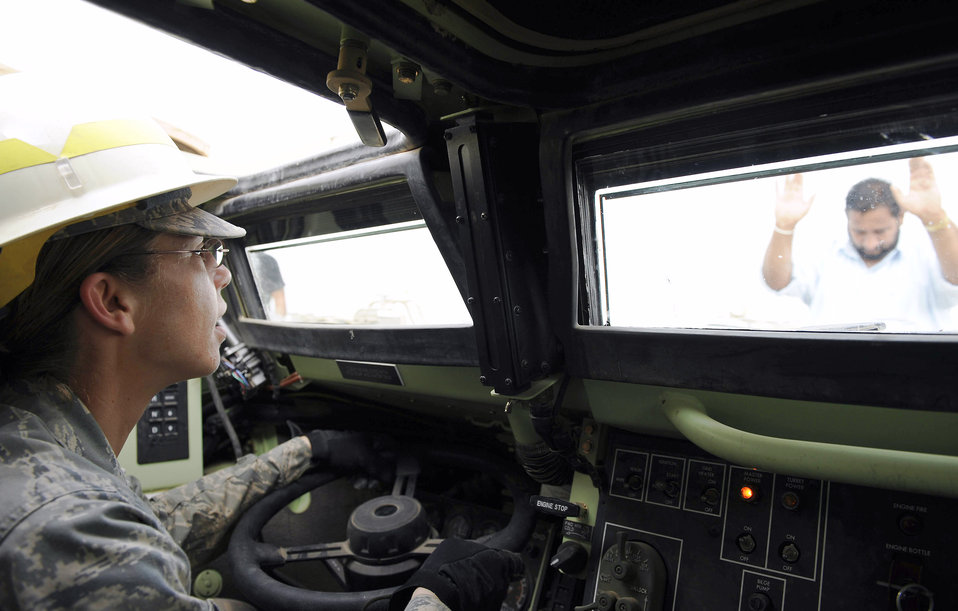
Airmen process more than $1 billion worth of equipment

An Iraqi contractor motions Tech. Sgt. Julie Bottroff to halt after driving up on a semitruck in an armored security vehicle Feb. 27 at Camp Liberty, Iraq. This vehicle is a part of a convoy going to Kuwait with approximately 30 semitrucks loaded with all types of military vehicles. Sergeant Bottroff is assigned to the 732nd Expeditionary Logistical Readiness Squadron, 586th Task Force. She is a native of Oklahoma City and deployed from Shaw Air Force Base, S.C.